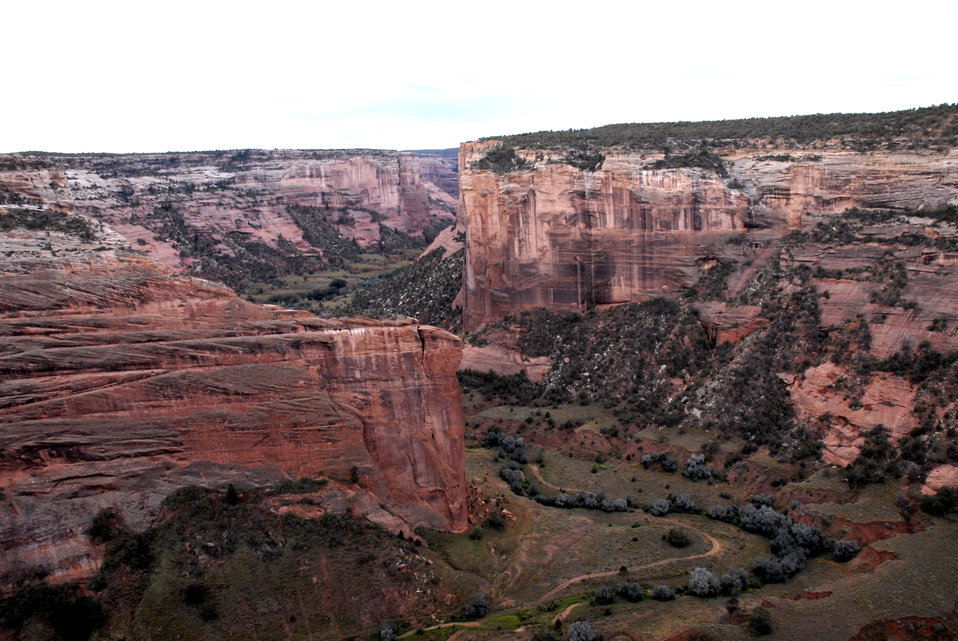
The sun slowly rises over Canyon de Chelly National Monument in Chinle, Arizona on September 11, 2008.